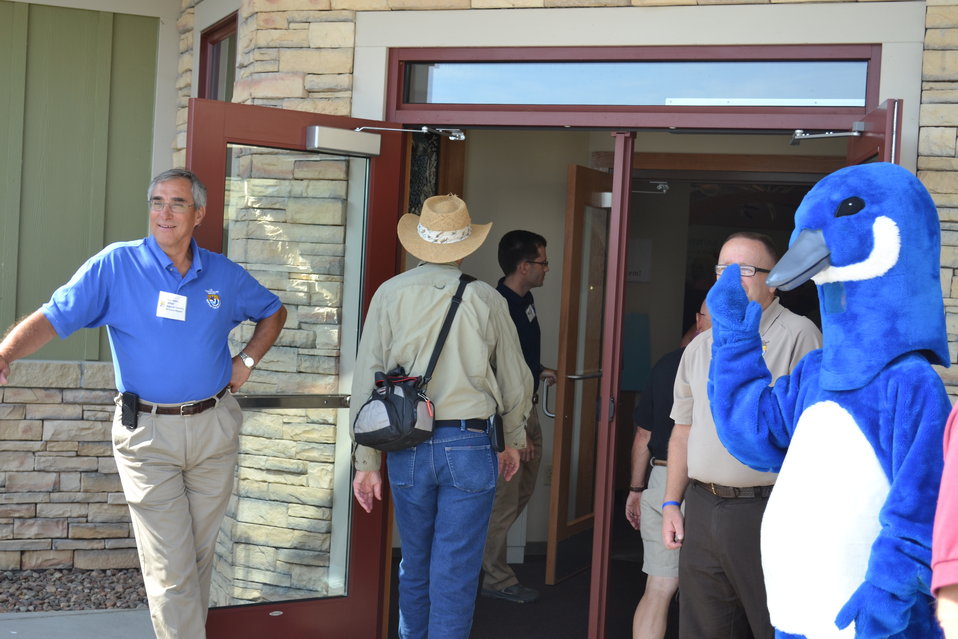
Regional Director Tom Melius and Puddles greet visitors as they enter the visitor center for the first time.